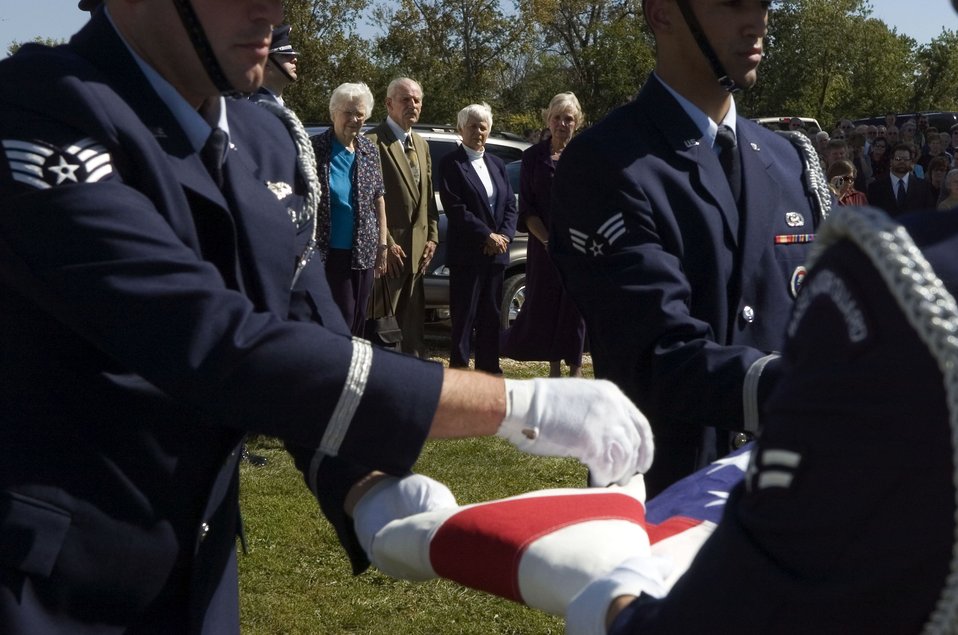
Siblings honor brother's sacrifice

Honor Guard members from Scott Air Force Base, Ill., conduct a flag ceremony Oct. 1 during a memorial service for 1st Lt. Bruce Sweney, an Air Force pilot shot down over North Korea in 1951. Lieutenant Sweney's brother and three sisters (background) attended the service held in a rural church near Avon, Ill., where he grew up before entering the Air Force. He is one of 389 still listed as missing in action from the Korean War.